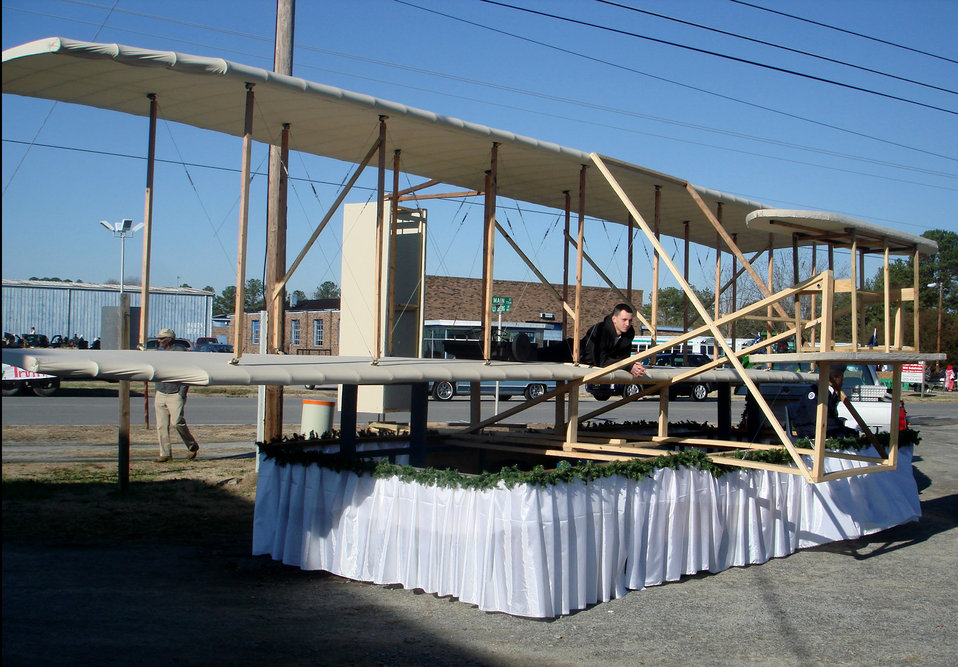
Junior ROTC cadets revisit history, build Wright Flyer replica

Air Force Junior ROTC detachment NC-945 cadets from SouthWest Edgecombe High School, N.C., built a replica of the Wright Flyer in December 2008 that spans the original dimensions of 18 feet by 40 feet. The cadets were inspired by a trip to the Wright Brothers' memorial in Kitty Hawk, N.C., and used more than 500 feet of pine and 420 feet of muslin in addition to numerous other materials.